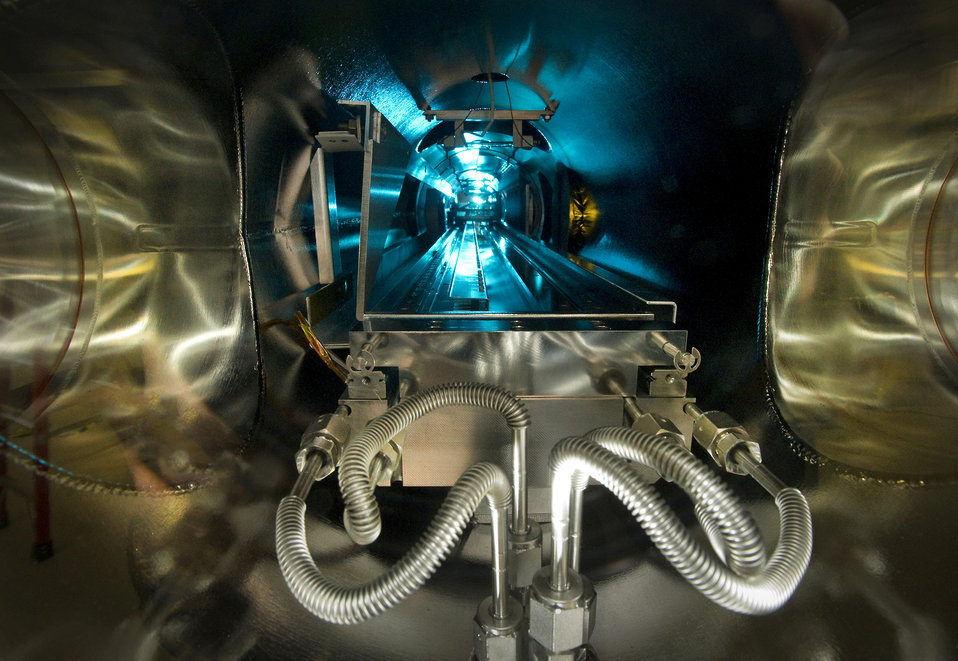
Repurposing the Xbox

At Brookhaven National Laboratory, scientists have developed a custom-built machine that can grow special lenses, one atomic layer at a time. The machine is as long as an entire room, and scientists use a reprogrammed Xbox controller to direct a transport car through the vacuum-sealed chamber (pictured). The transport car collects plasma-borne particles that form the lenses that will eventually be used to focus high-intensity x-ray beams to reveal the details of nano material structures.